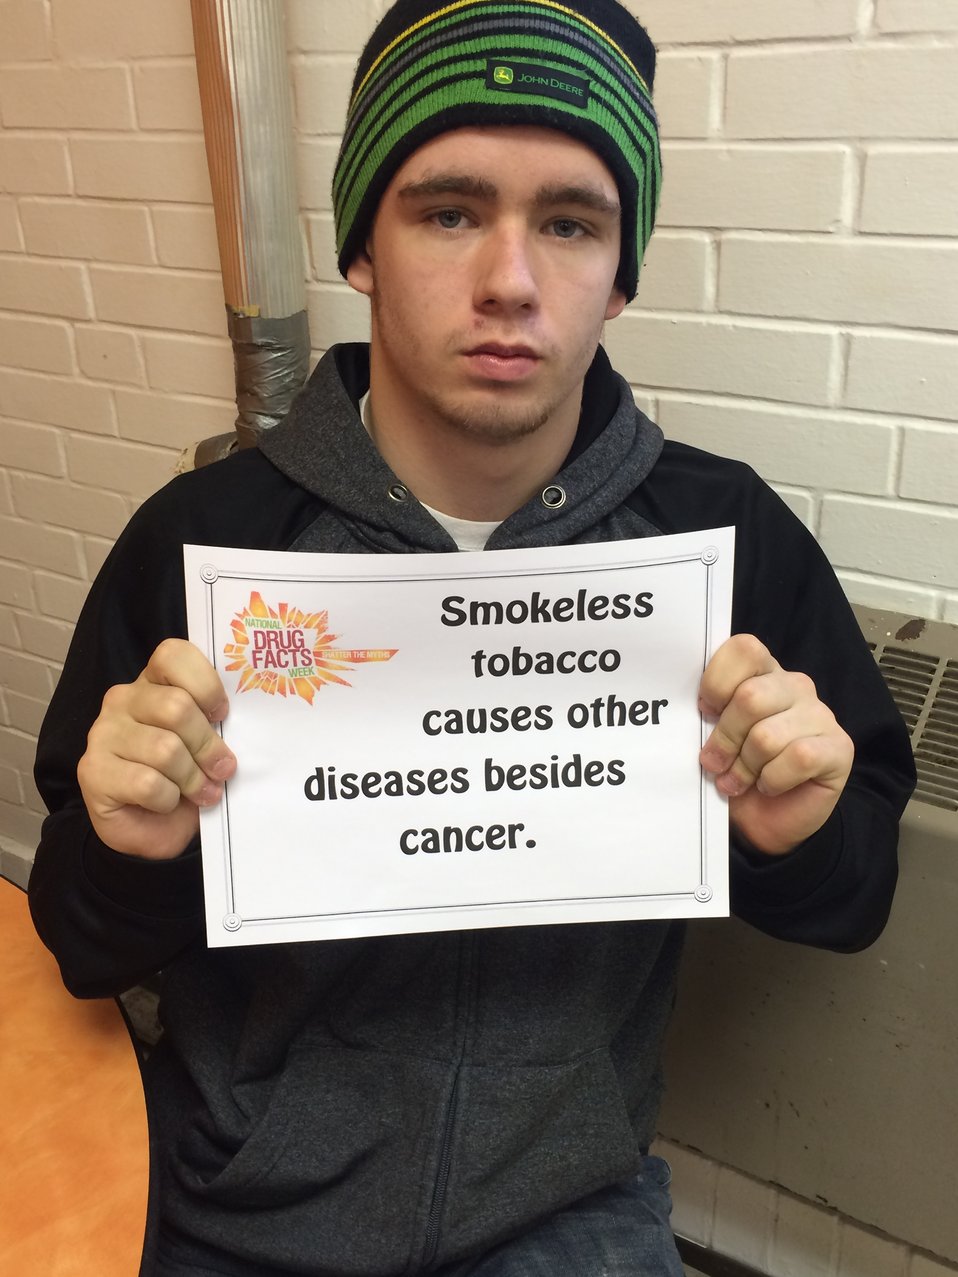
I'm Shattering the Myths Because...

Teenagers from the Van Buren County SAFE Coalition's, Youth Leadership Council (YLC) in Keosauqua, Iowa participate in various events during National Drug Facts Week, 2014.